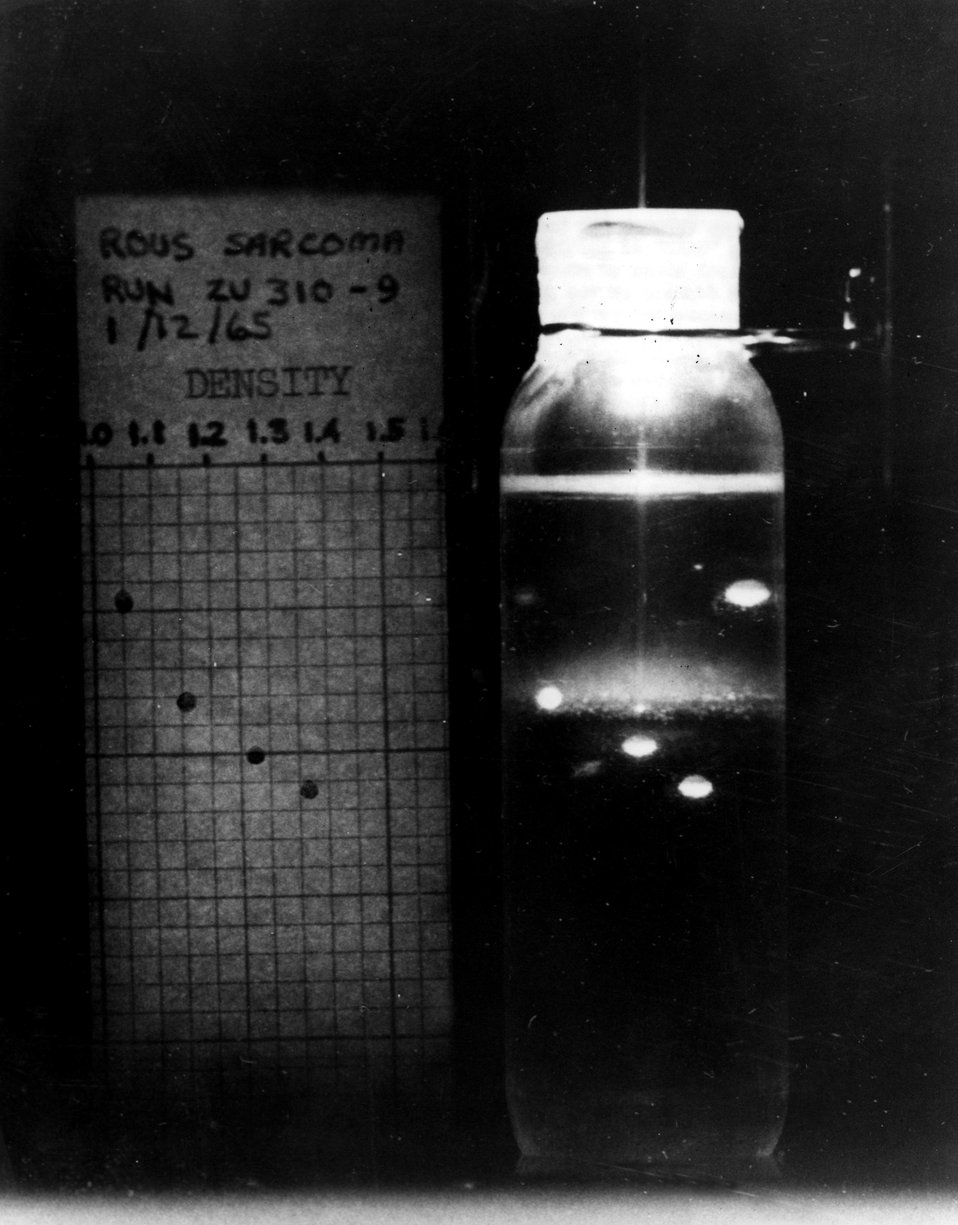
The band recovery apparatus is one of a family of new instruments and equipment developed to attack the problems of concentrating, detecting and recovering virus particles in a high state of purity. c. 1966